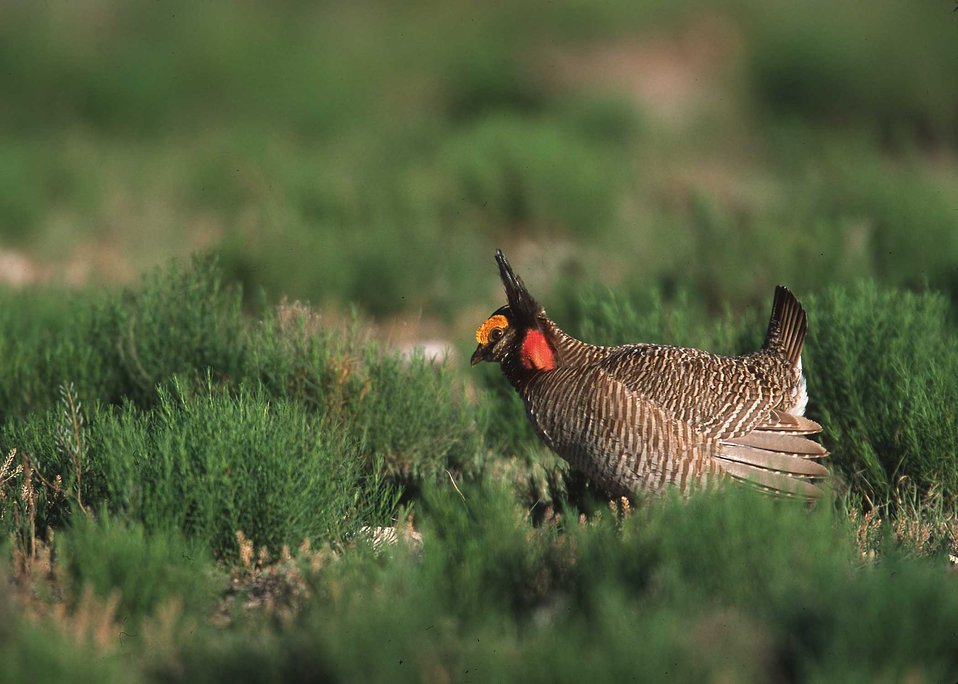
Lesser prairie chicken in Eastern New Mexico.